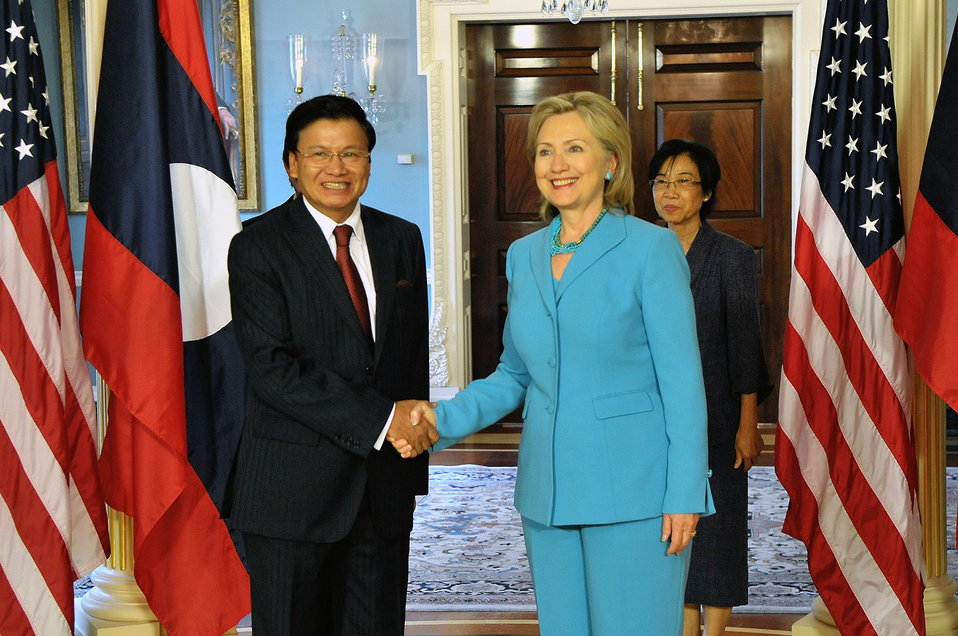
Secretary Clinton Shakes Hands With Laos Foreign Minister Thongloun Sisoulith

U.S. Secretary of State Hillary Rodham Clinton shakes hands with Laos Foreign Minister Thongloun Sisoulith after a bilateral meeting at the U.S. Department of State in Washington, D.C., on July 13, 2010.